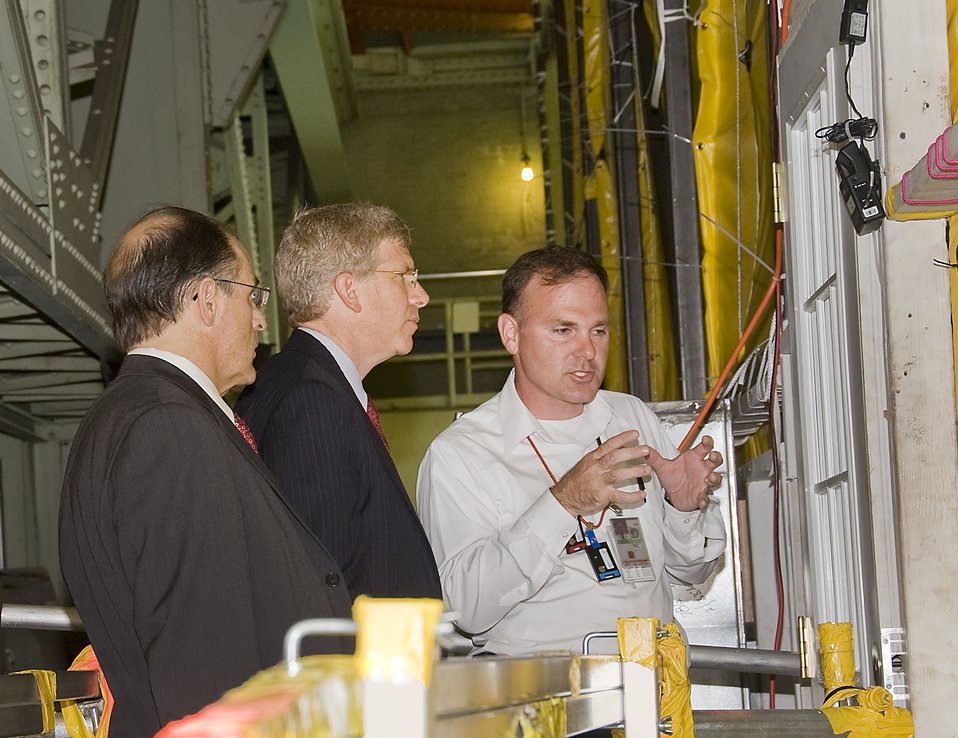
Brookhaven 1

Deputy secretary of doe.Daniel poneman